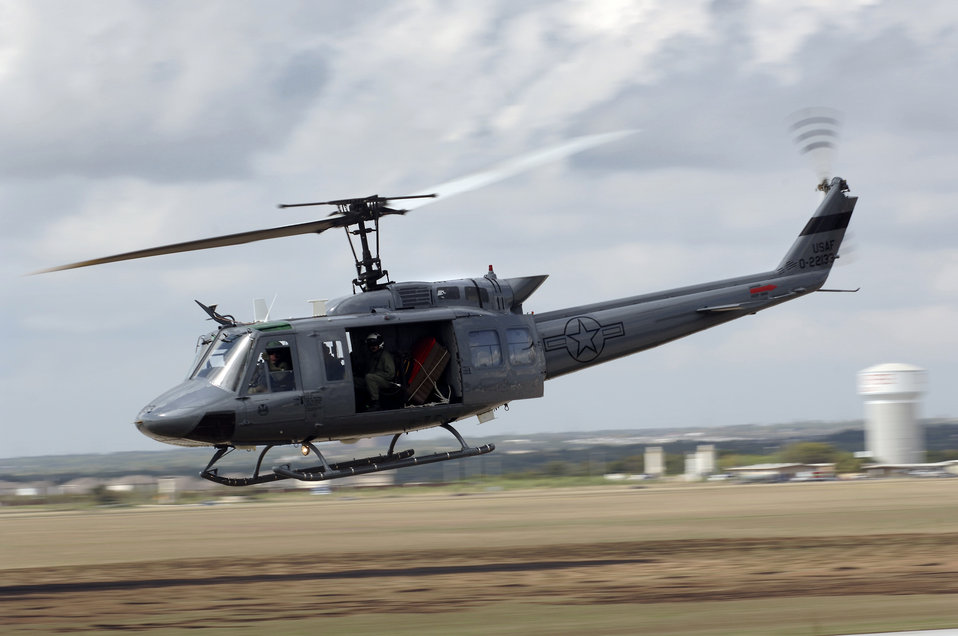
New Huey

RANDOLPH AIR FORCE BASE, Texas (AFPN) -- Capt. John Beurer (right seat) pilots the TH-1H trainer helicopter with Jeff Cutrell, instructor pilot. This is the first of 24 TH-1H's that will be modified to train Air Force helicopter student pilots. Some of the helicopter benefits include an engine upgrade from--1,400 to now 1,600 brake horsepower, stronger transmission, main rotor shaft, strengthened tail boom, repositioned tail rotor to the right side for better efficiency and an all new